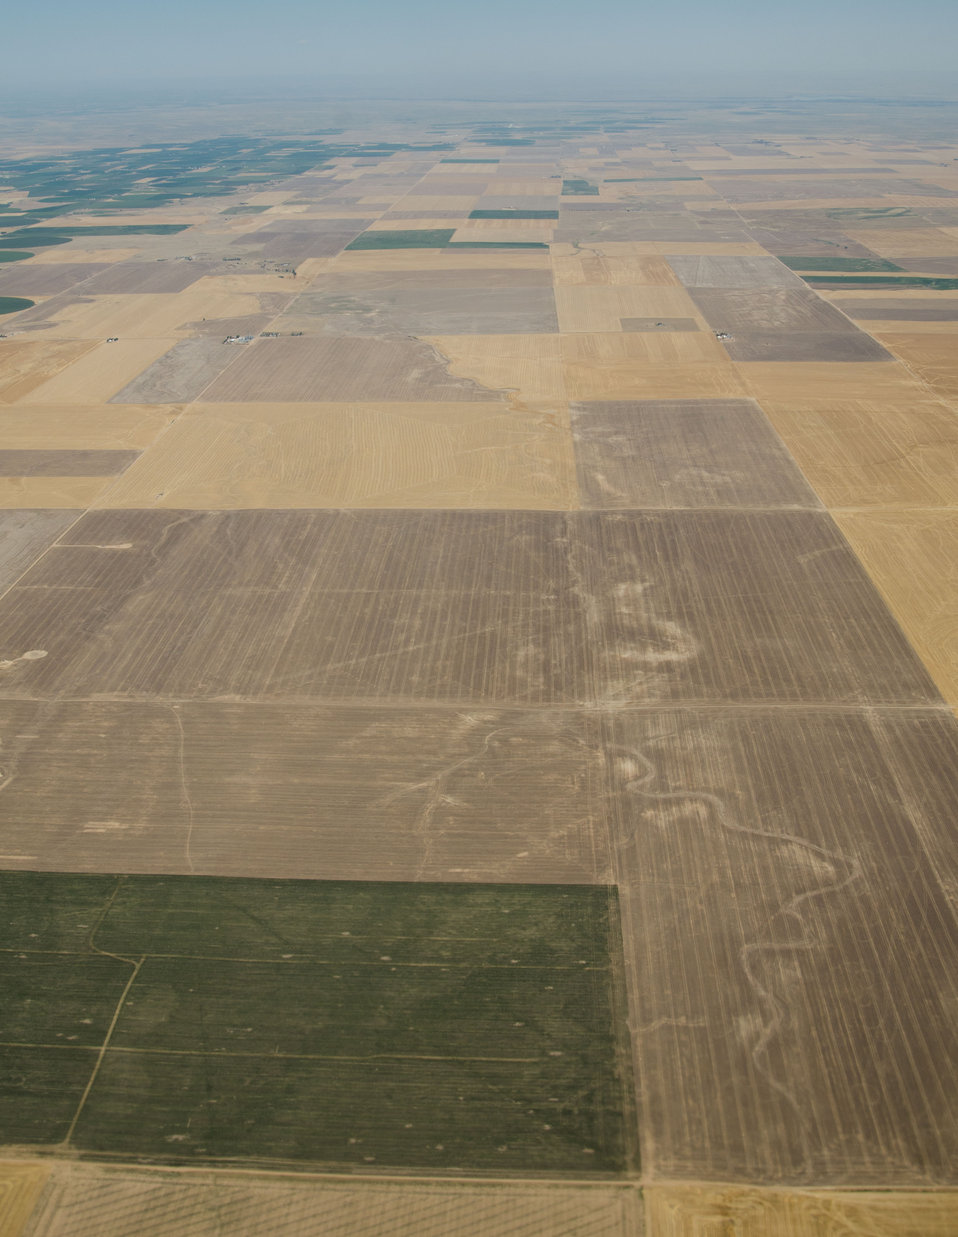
Aerial views of drought affected Colorado farm lands, 80 miles east of Denver, Colorado on Saturday, July 21, 2012.